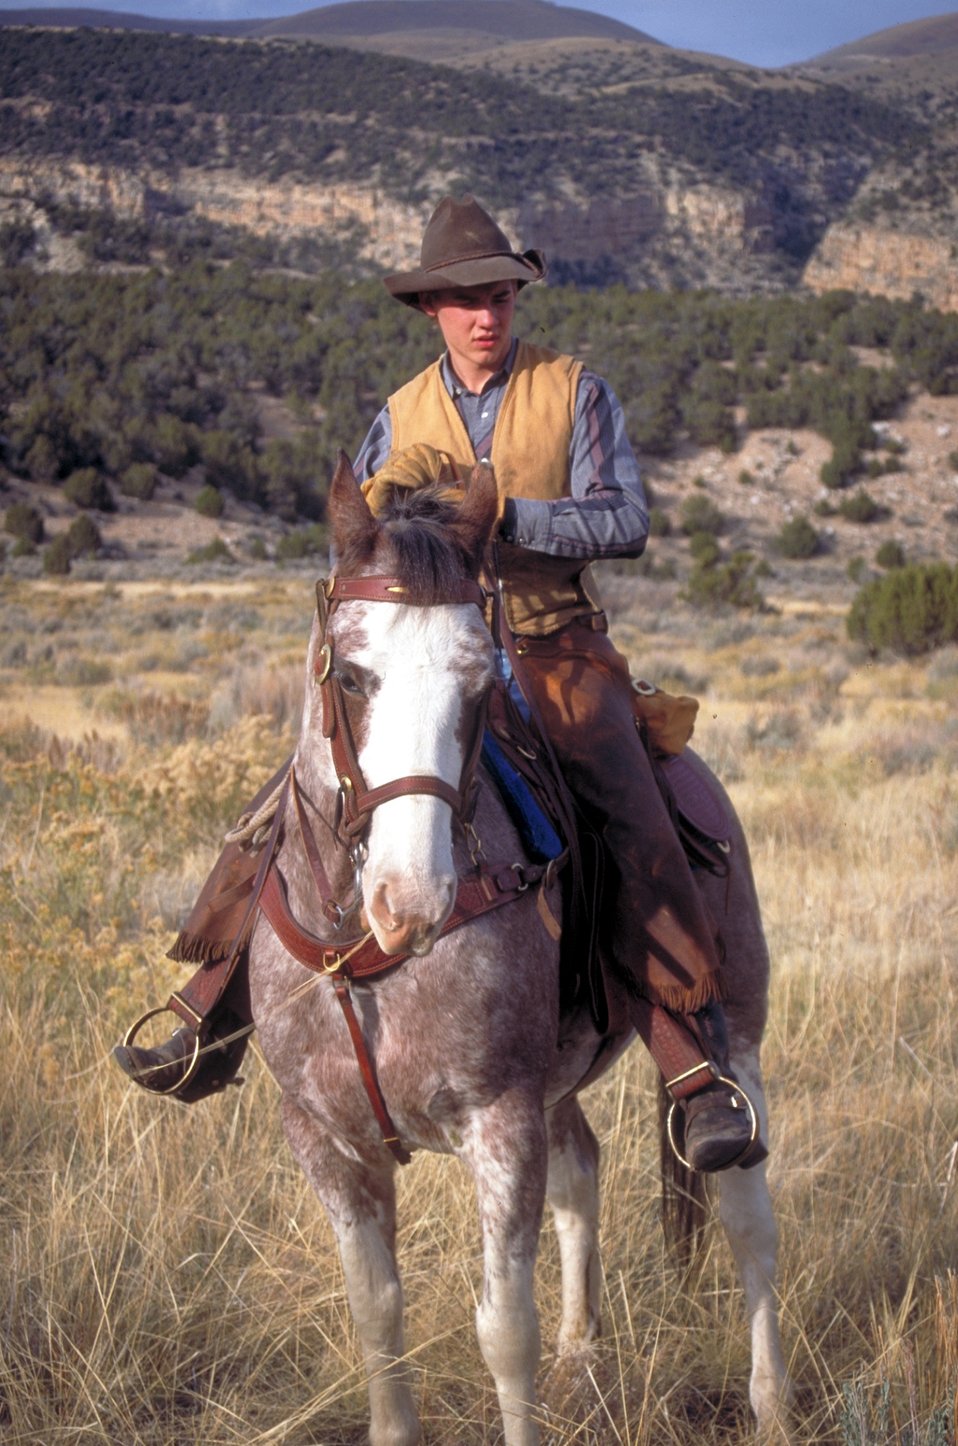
Working cowboys living near Vernal, Utah.